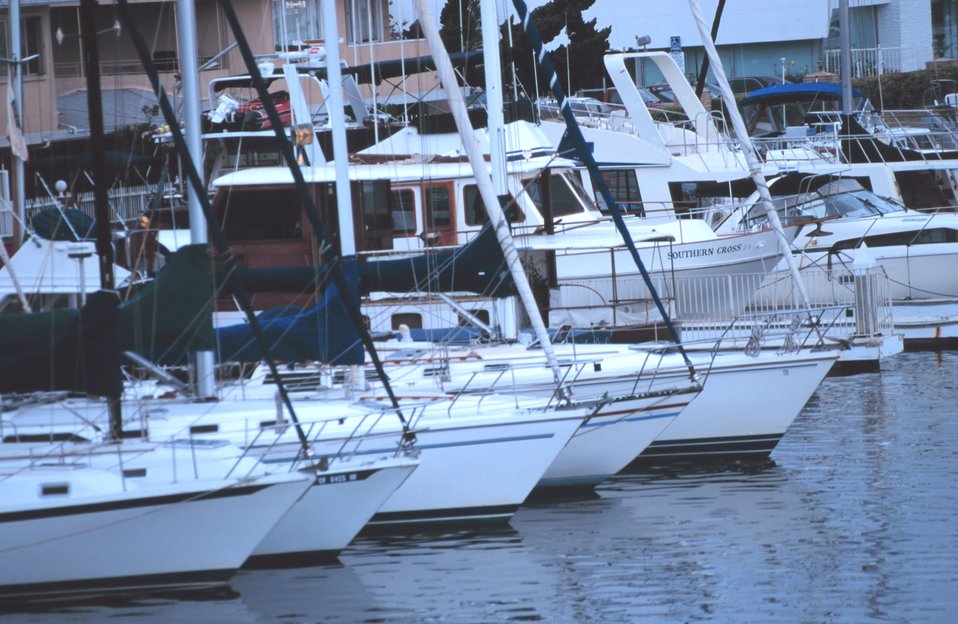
The harbor at Santa Barbara